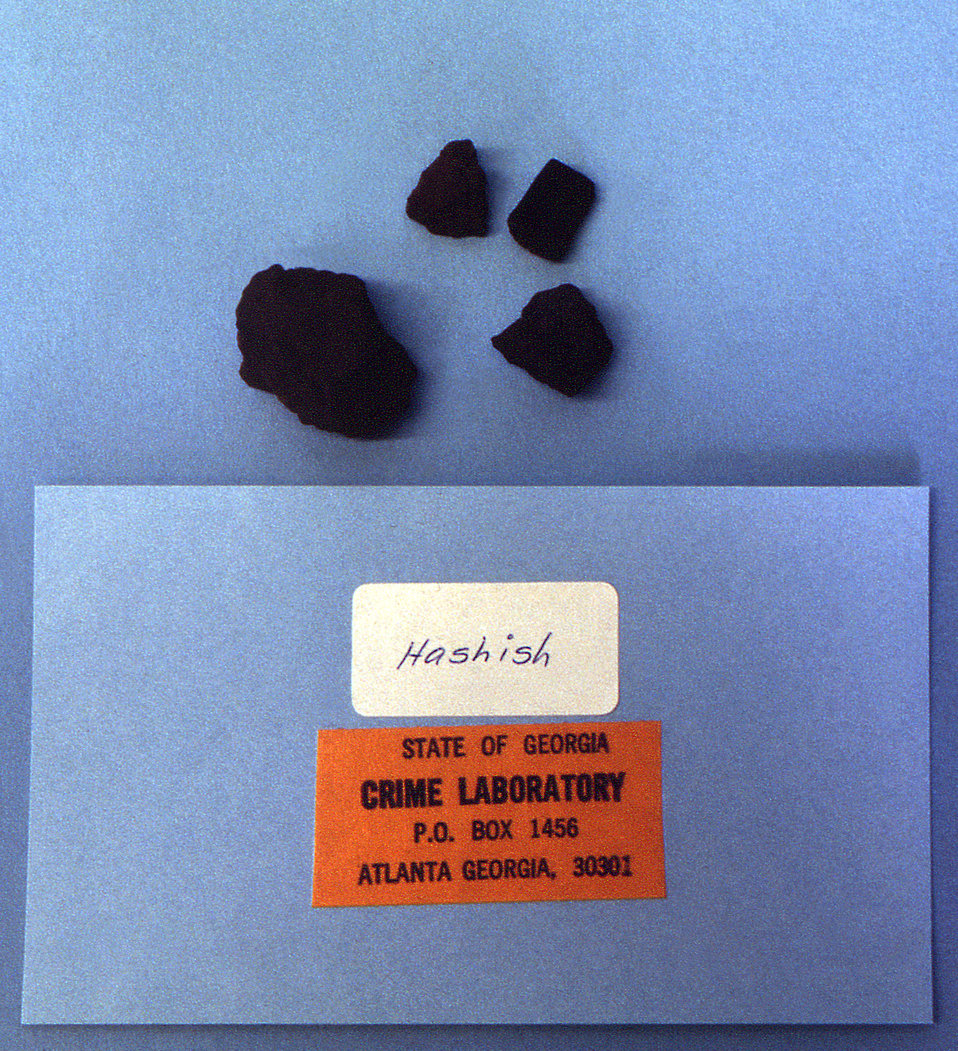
Confiscated during the control of criminal activities in and around the city of Atlanta, Georgia during 1973, this image depicts four chunks of coal-black hashish.